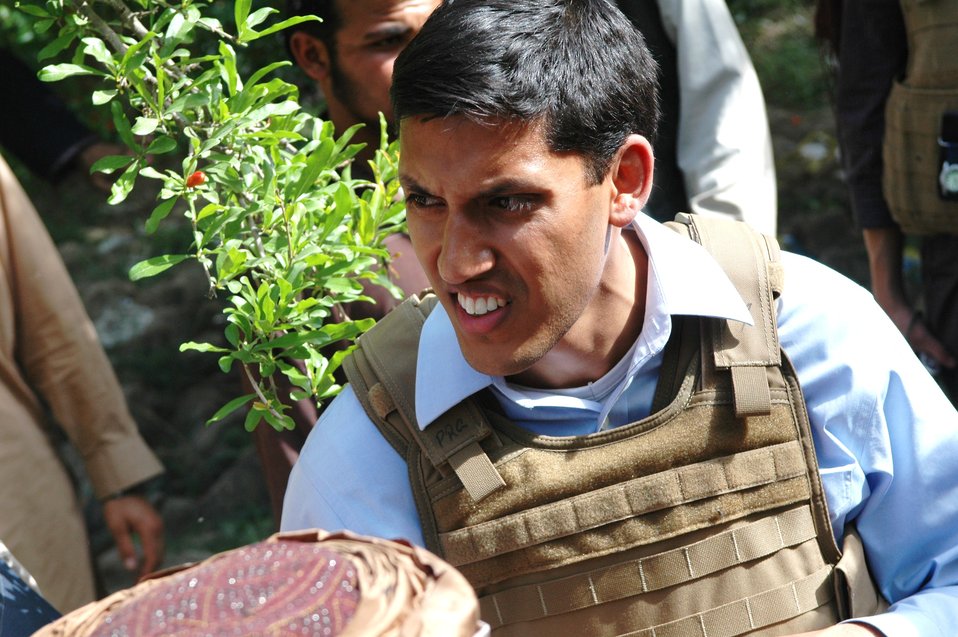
Dr Shah Visits Argandab April 10, 2010